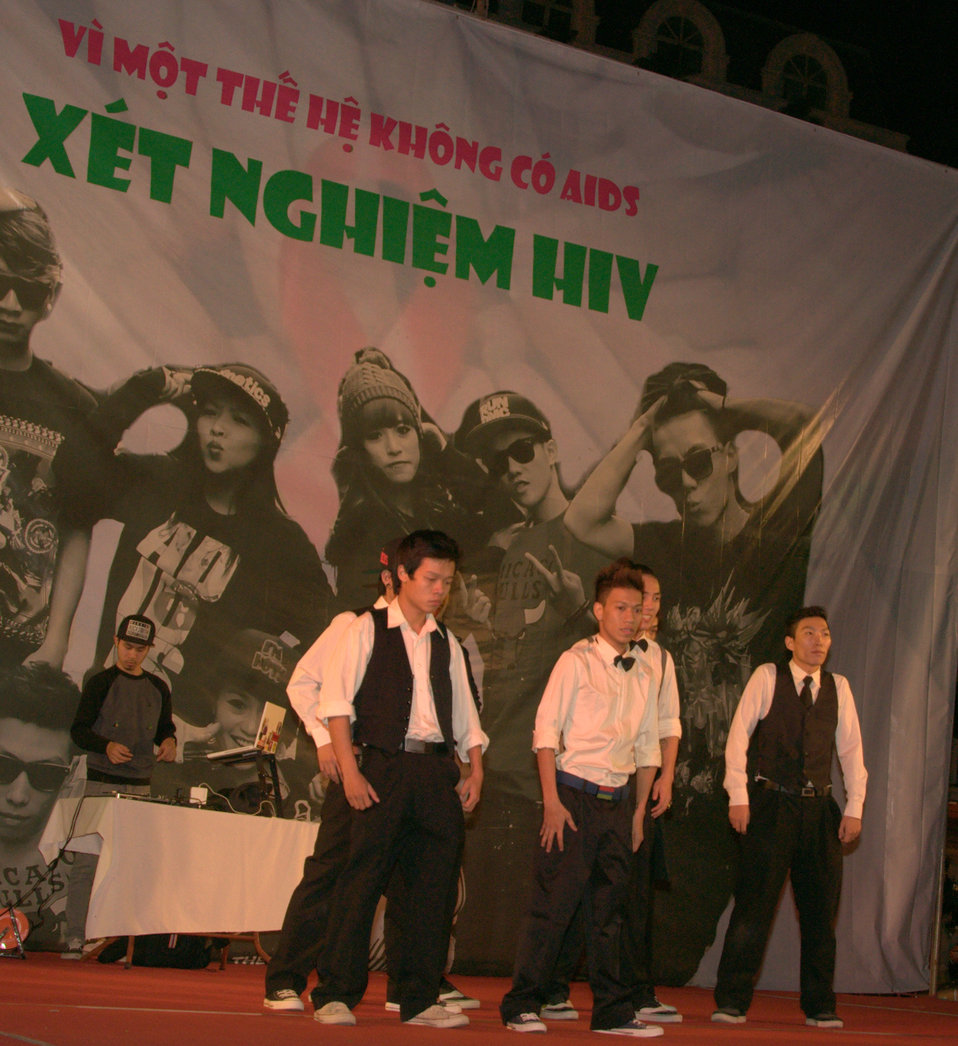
USAID and PEPFAR supports an outdoor concert to promote Vietnam's national action month for HIV

Hanoi, December 18, 2012.